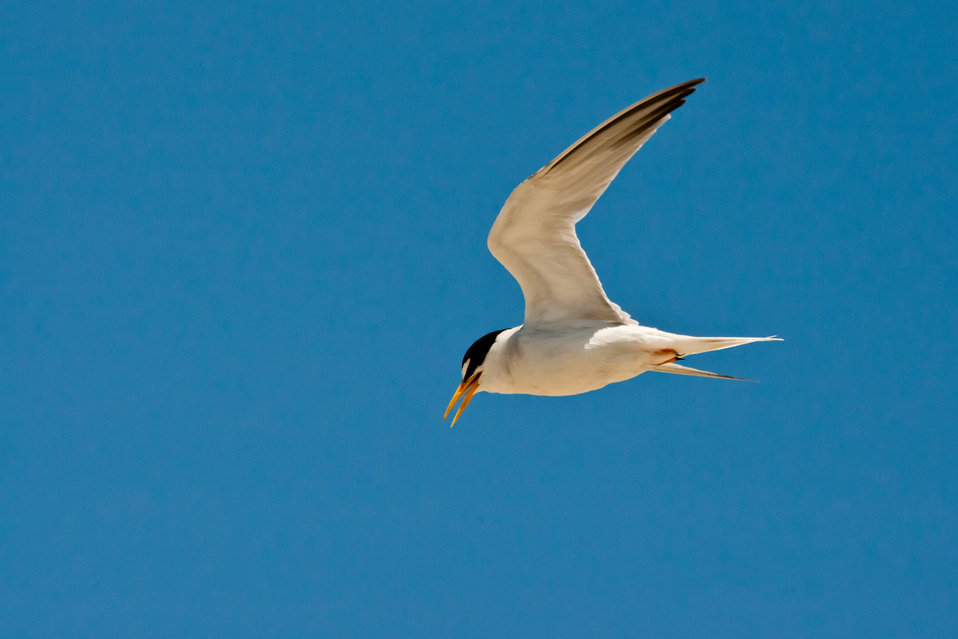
California Least tern adult

This tern is searching for fish along the shoreline to feed its chicks waiting in the sand dunes